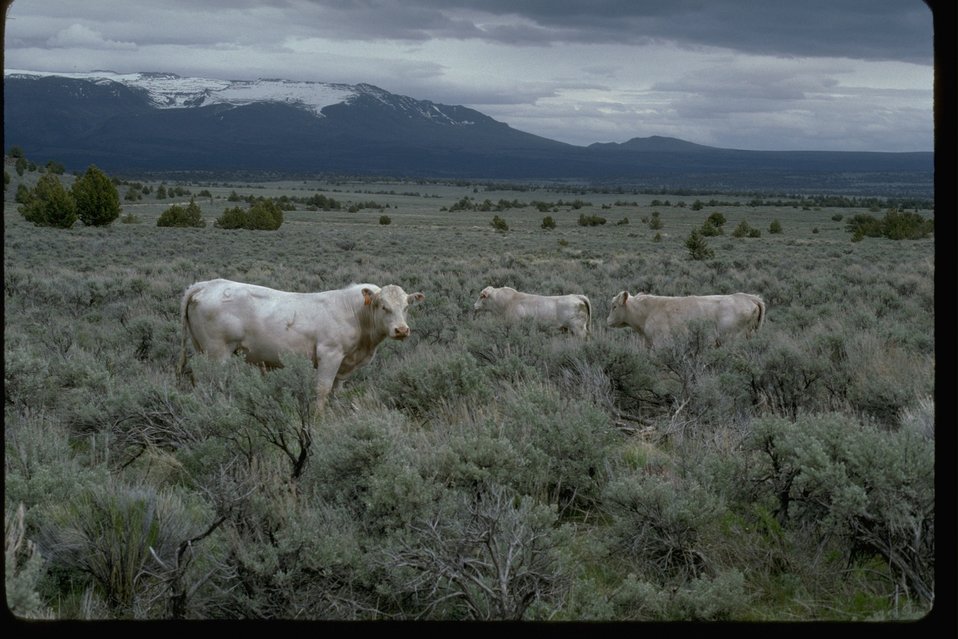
Livestock grazing near the south segment of the Steens back country byway.